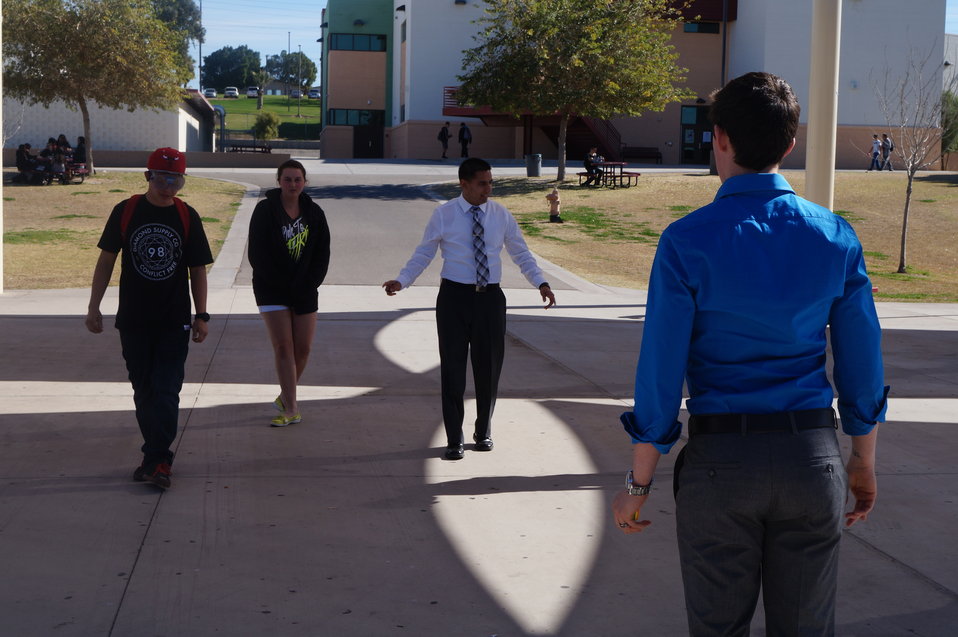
Nationa Drug Facts Week - KOFA HS

The Drug Demand Reduction Program out of Yuma Arizona held numerous events at local schools to support NIDA's National Drug Facts Week, Jan. 27-Feb. 2 2014. Teens participated in drug awareness games, and helped to Shatter the Myths about teen substance abuse.